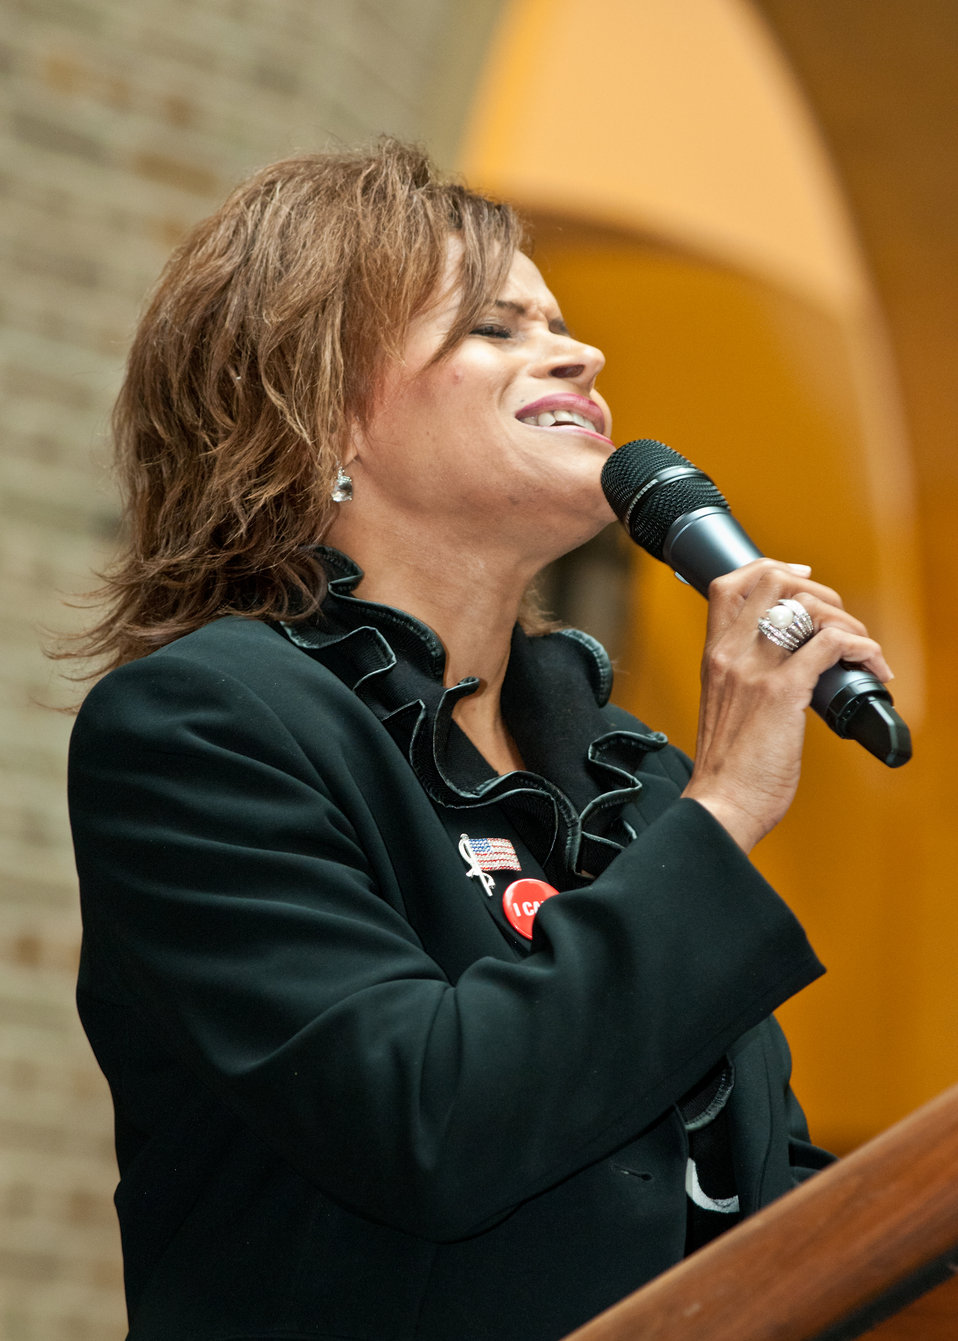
Renee Allen, Office of Executive Services sings the National Anthem at the kick-off of the U.S. Department of Agriculture 2011 Combined Federal Campaign “Compassion of Individuals, Power of Community” at USDA in Washington, DC, on Wednesday, September 21, 2011. The theme of the 2011 campaign is “Celebrating 50 Years of Caring, Serving and Giving.”